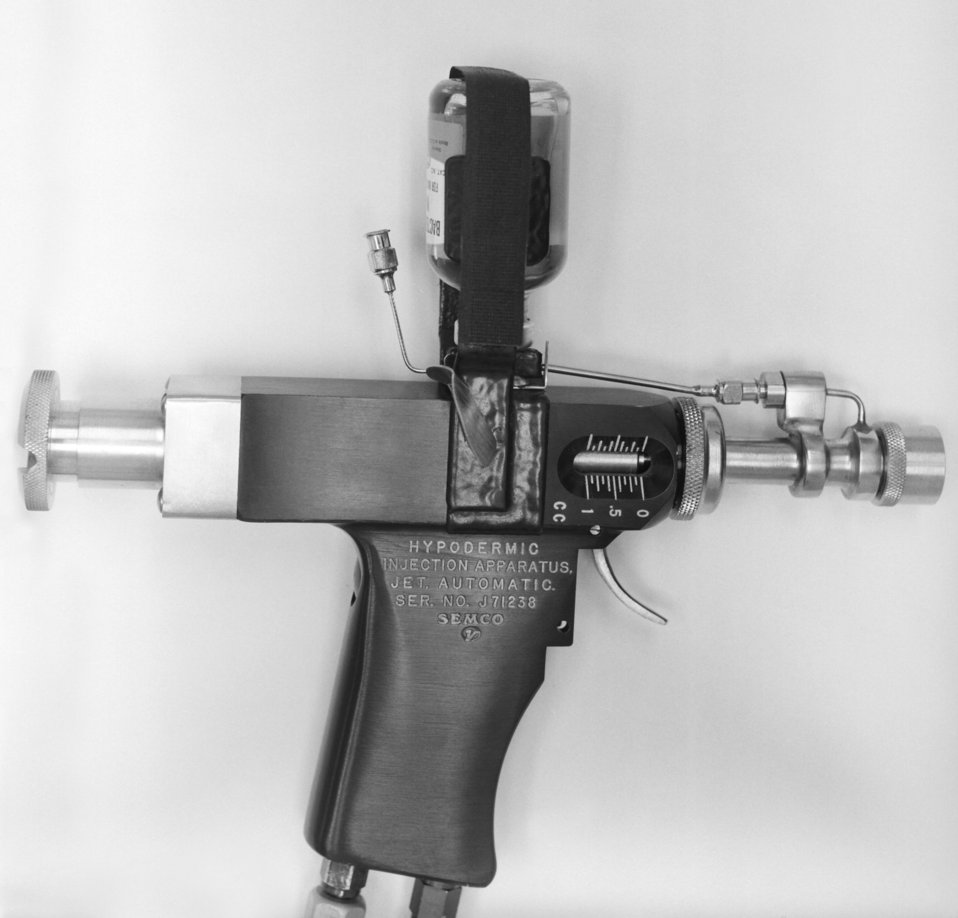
This was a Jet Injector, called a 'Ped-O-Jet�' used during mass-vaccination procedures, 1972.